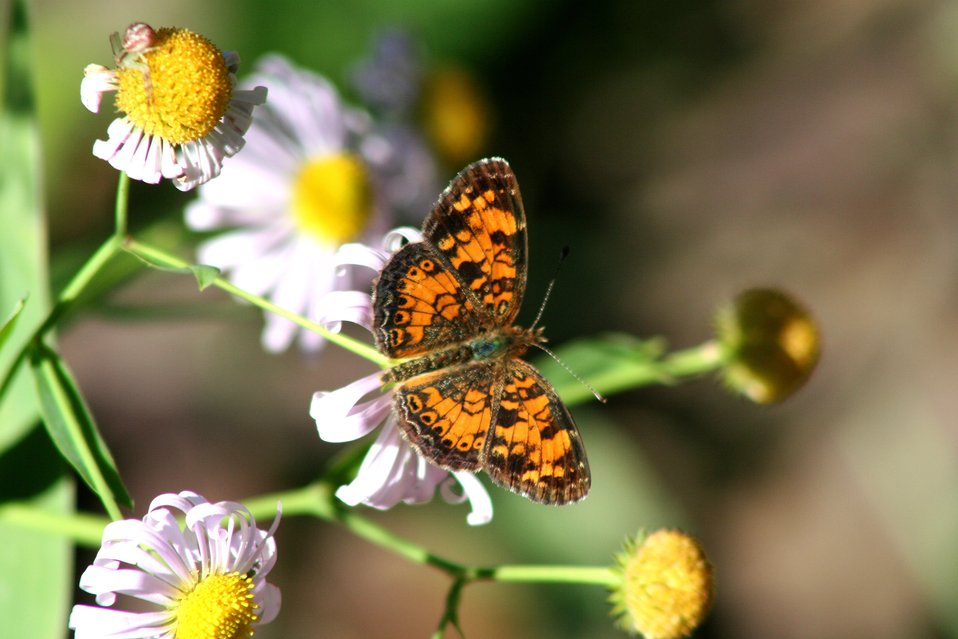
Pearl crescent butterfly on the federally threatened decurrent false aster.